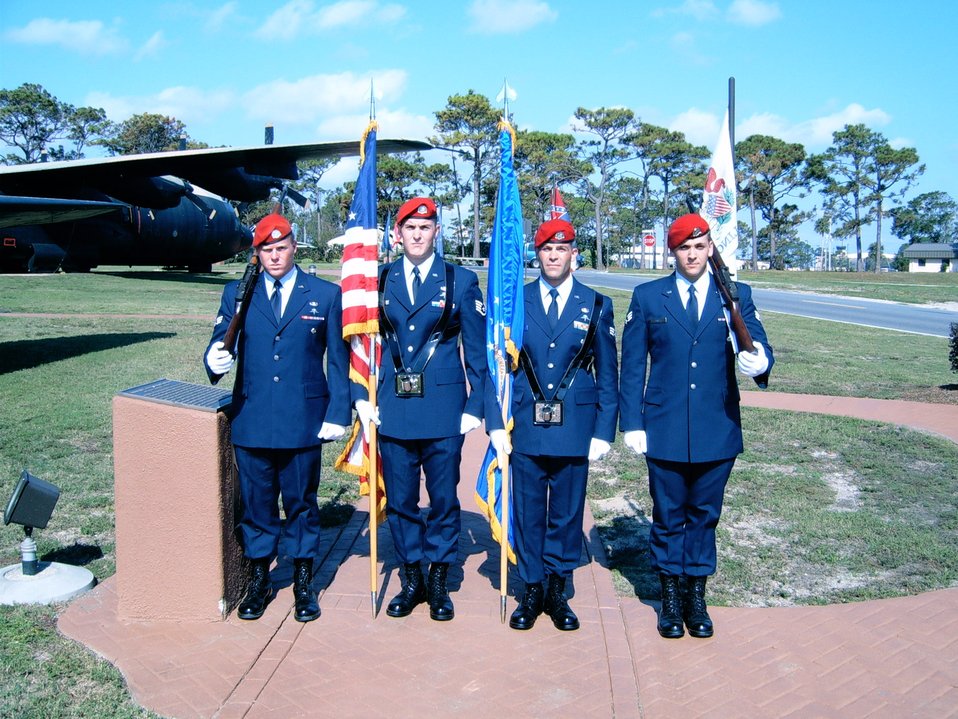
Special Operations Command Airman dies in Afghanistan

Staff Sgt. Timothy P. Davis (second from left) served as a member of the honor guard during a ceremony held Nov 12, 2005. Sergeant Davis died of wounds suffered when his vehicle encountered an improvised explosive device Feb. 20 in Afghanistan. He was assigned to the 23rd Special Tactics Squadron at Hurlburt Field, Fla.